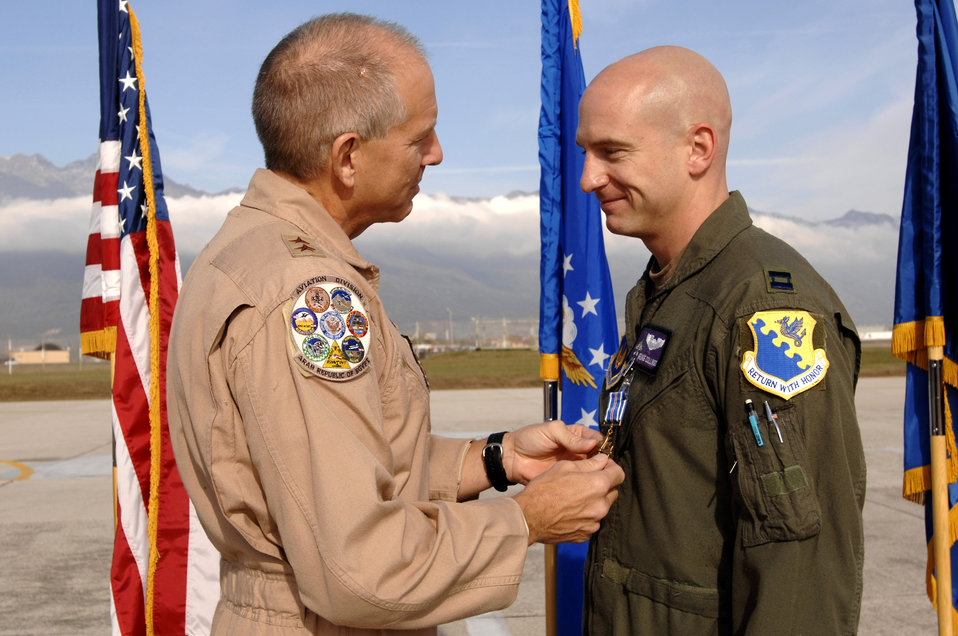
Father pins Distinguished Flying Cross on son

Maj. Gen. Michael Collings, the senior U.S. defense representative to Egypt, pins a Distinguished Flying Cross on Capt. George Collings Oct. 29 on the flightline here. General Collings flew into Aviano Air Base, Italy, to present Capt. Collings with the medal for distinguishing himself by extraordinary achievement while participating in aerial flight as an F-16 pilot with the 510th Expeditionary Fighter Squadron based out of Balad Air Base, Iraq. .